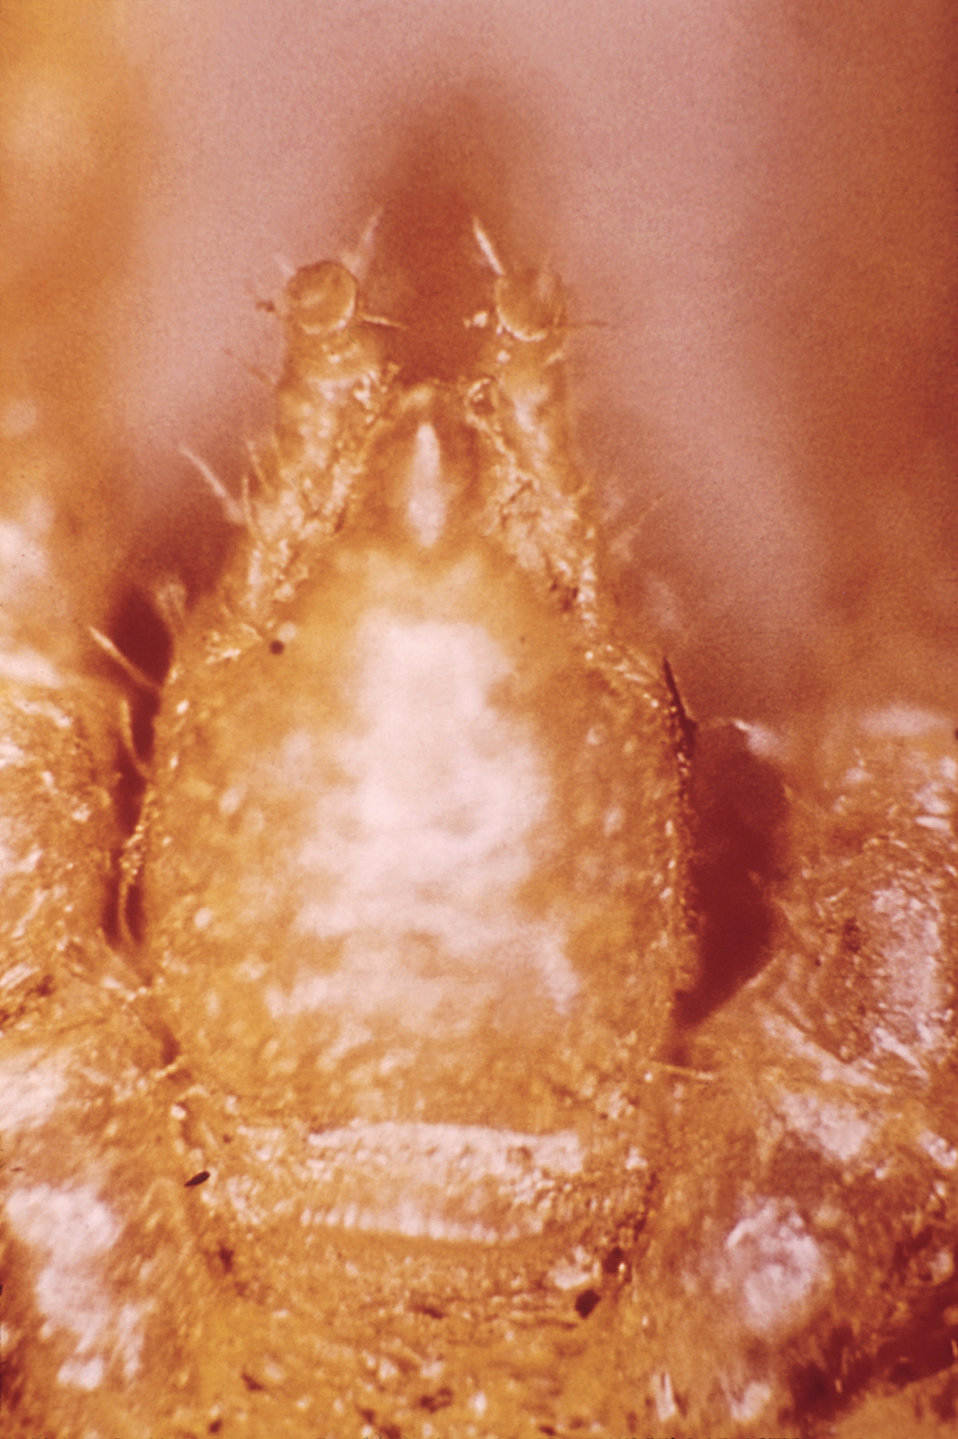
North American ticks of the genera Antricola and Otobius possess vestigial hypostomes, as is the case here.